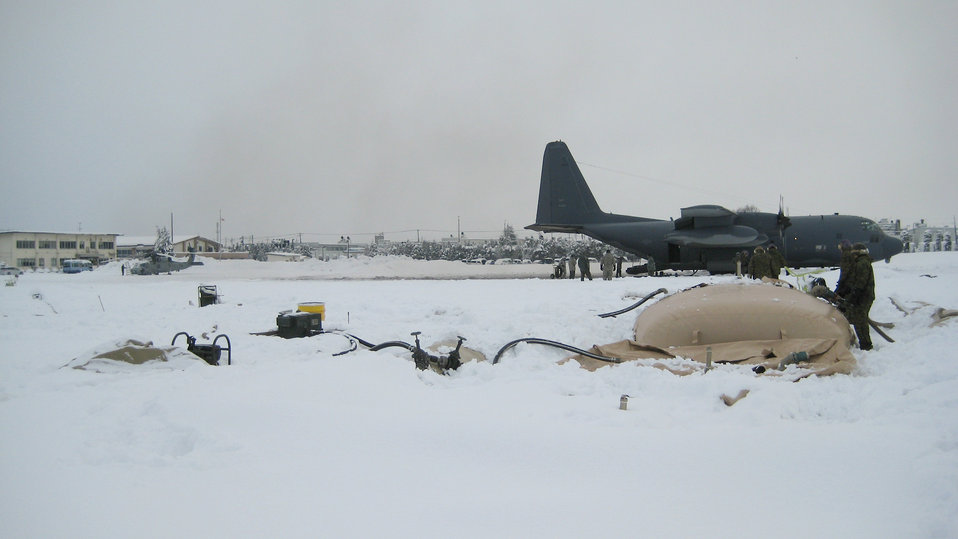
Forward area refueling point

Airmen assigned to the 374th Logistics Readiness Squadron Fuels Management Flight work with Marines at a forward area refueling point in support of humanitarian assistance and disaster relief efforts March 18, 2011, at Yamagata Airport, Japan.